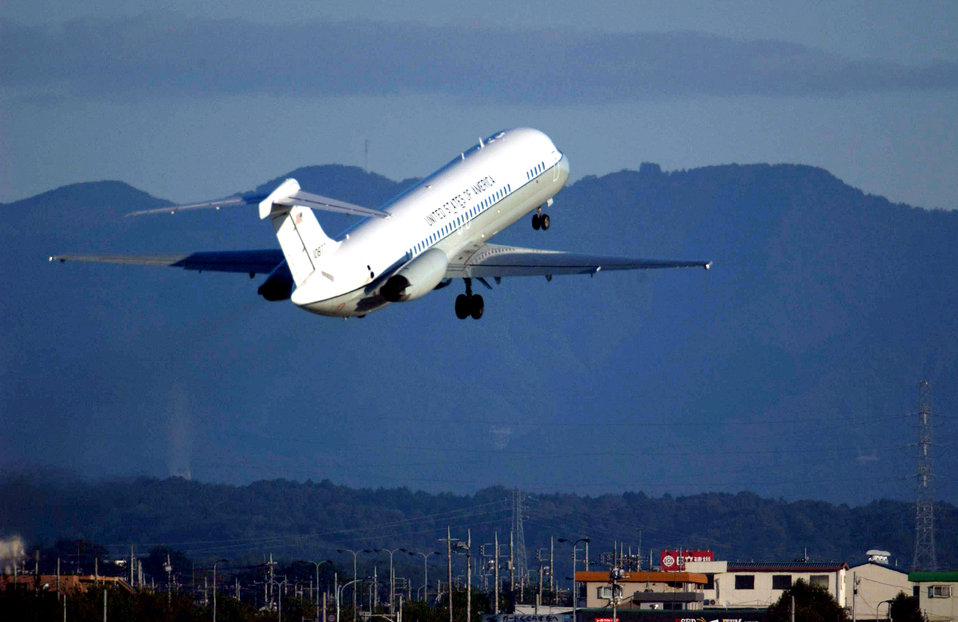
Bye bye birdie

YOKOTA AIR BASE, Japan -- A C-9 Nightingale from the 30th Airlift Squadron here took off for the final time Sept. 14 on its way to the